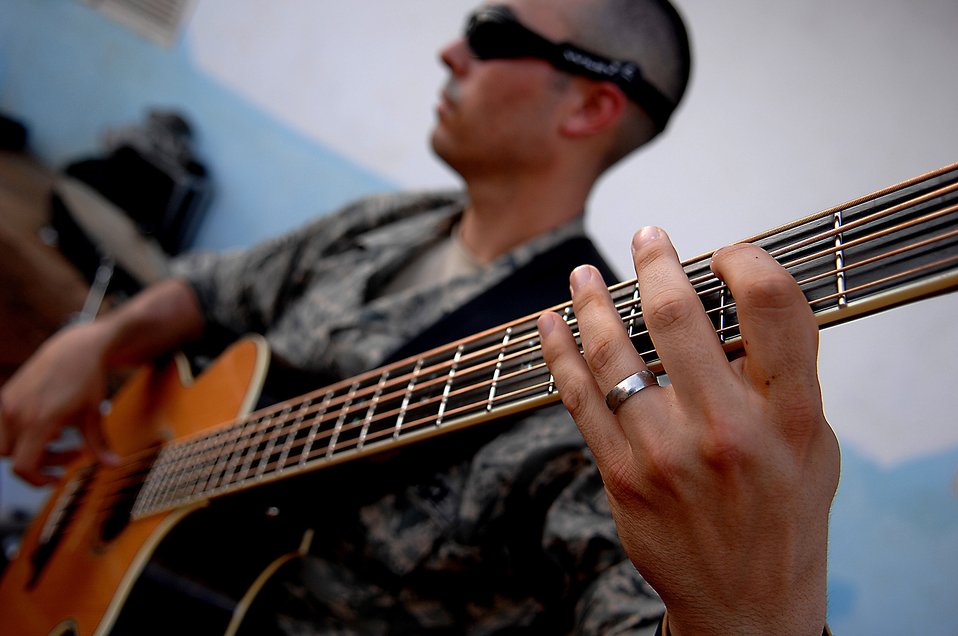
U.S. Air Force Band Concert, Djibouti

Senior Airman John D. Beasley performs for villagers May 22 in Negad, Djibouti. The band is deployed to support Combined Joint Task Force - Horn of Africa out of Camp Lemonier, Djibouti. Airman Beasley is the bass player with the Air Force Central Command band, Falcon.